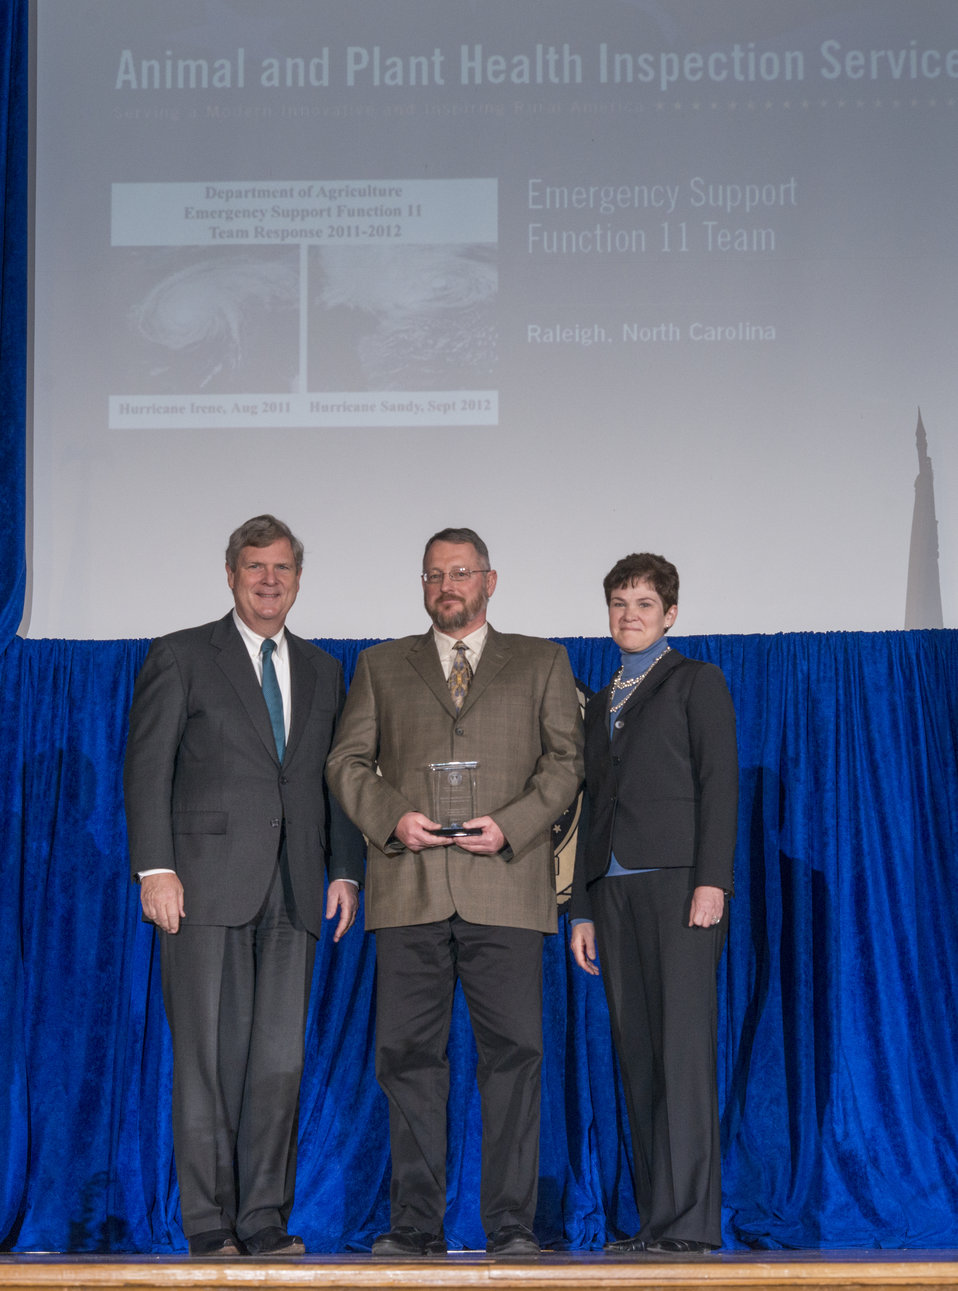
Agriculture Secretary Tom Vilsack and Agriculture Deputy Secretary Krysta Harden present the Secretary’s Honor Award to the Emergency Support Function 11 Team, Animal and Plant Health Inspection Service (APHIS) in Raleigh, NC Group leader Matthew P. Bragg for professional excellence, exceptional accomplishment and individual dedication during the Emergency Support Function 11 responses after Hurricanes Irene in 2011 and Sandy in 2012 at the 2013 Secretary's Honor Awards in the Jefferson Auditorium at the U.S. Department of Agriculture (USDA) in Washington, D.C. on Wednesday, Dec. 11, 2013.